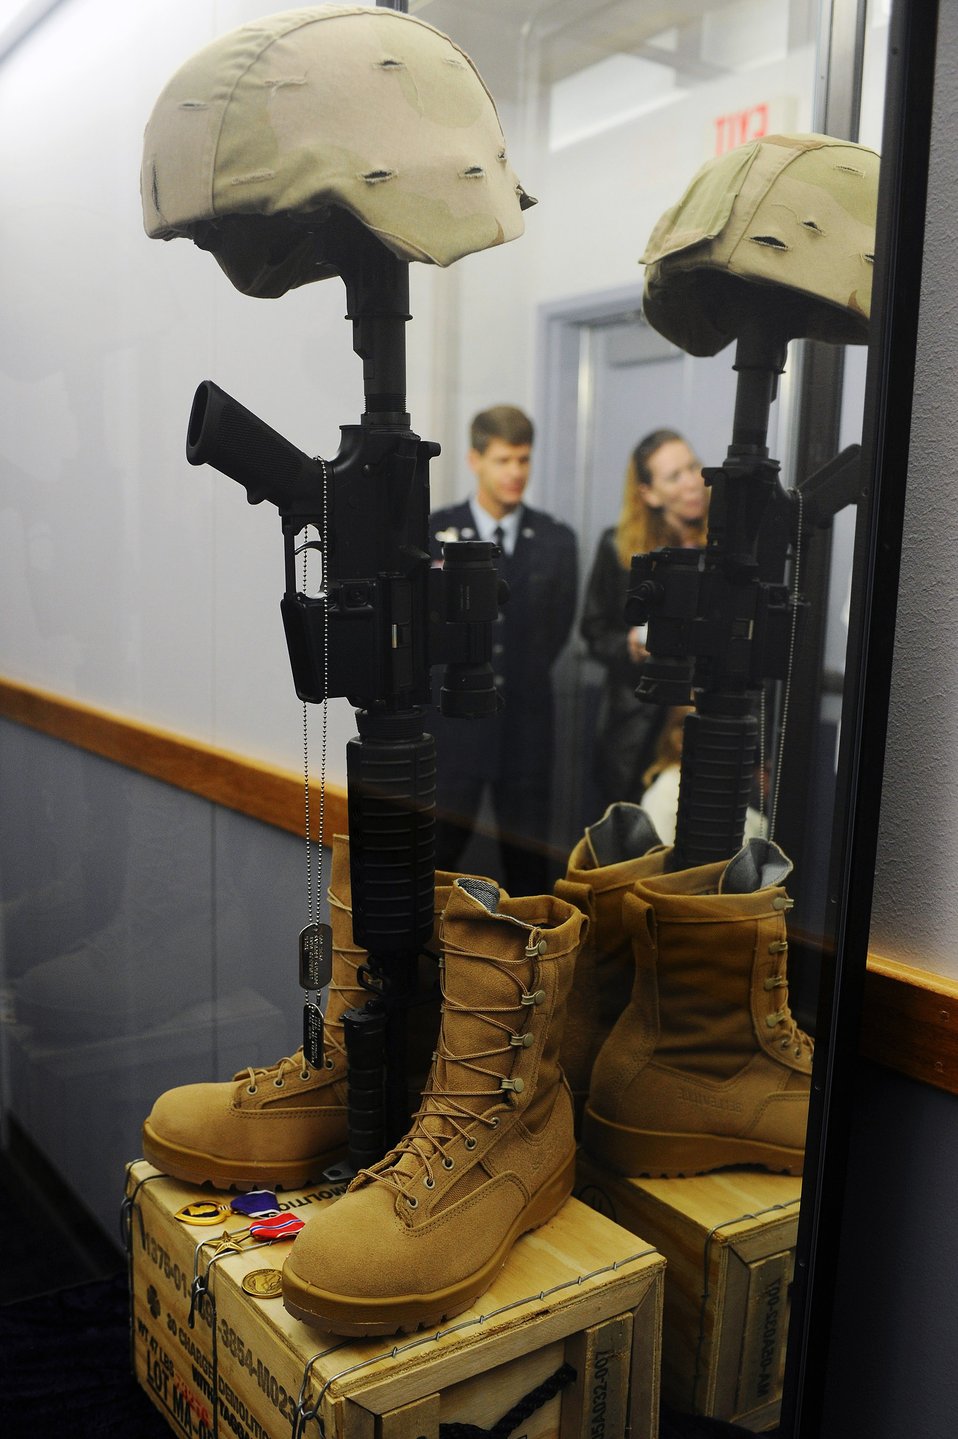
Fallen EOD Airman dedication ceremony

Mrs. Rebecca Clemmons and Brig. Gen. Mark Graper, 354th Fighter Wing commander, take a moment of silence and reflection as they look at Master Sgt. Brad Clemmon's, 354th Civil Engineer Squadron explosive ordnance disposal flight, memorial Aug. 21, 2008, at Eielson Air Force Base, Alaska. Sergeant Clemmons family, friends and co-workers attended the building dedication ceremony to honor his ultimate sacrifice.